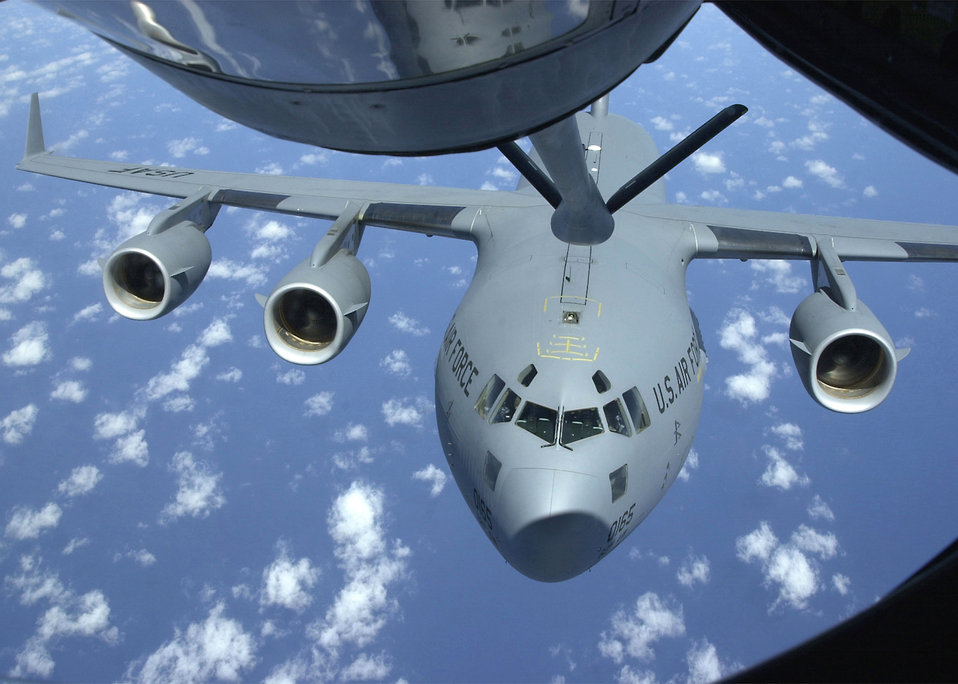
Refueling

OVER THE SOUTH CHINA SEA -- A C-17 Globemaster III, from the 7th Airlift Squadron, 62nd Airlift Wing, McChord Air Force Base, Wash., refuels from a KC-135R Feb. 5, over the South China Sea. Four C-17s from McChord delivered humanitarian aid, tents and blankets, to earthquake victims in India. Aerial refueling by KC-135s helped get U.S. humanitarian aid into India in 27 hours.